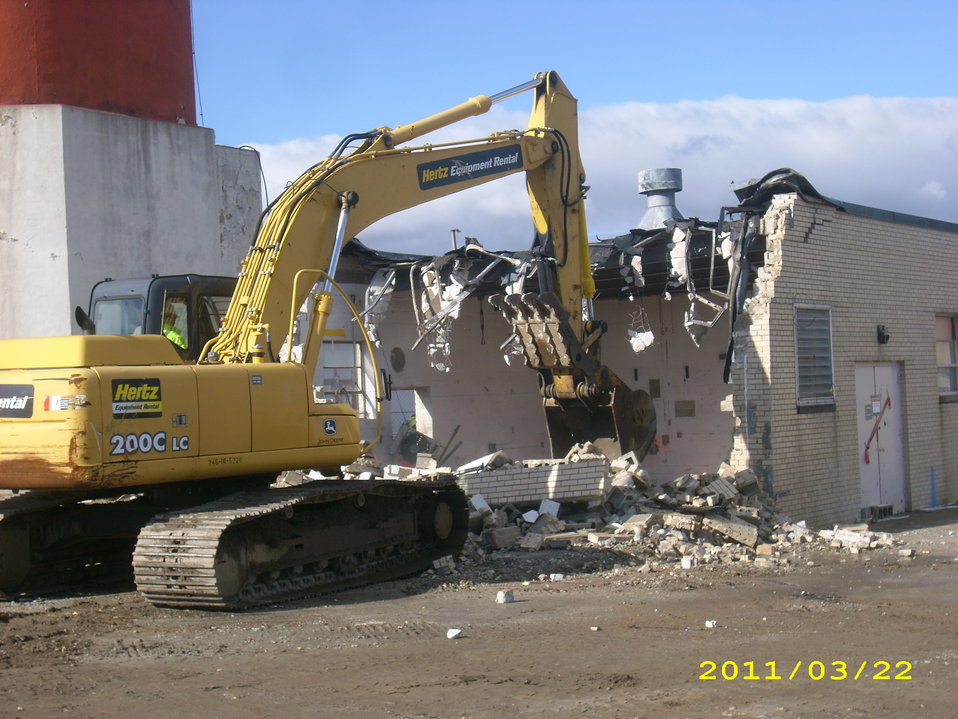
Brookhaven Recovery Act Workers Install Cap, Advance Reactor Decommissioning

Recovery Act workers demolish the Building 802 Fan House.

Recovery Act workers completed the installation of an impermeable cap over the grounds of a reactor building at Brookhaven National Laboratory (BNL) to prevent rain and other moisture from infiltrating radiologically contaminated soil. Installation of the cap is part of broader Recovery Act work at BGRR that involves decommissioning the reactor.